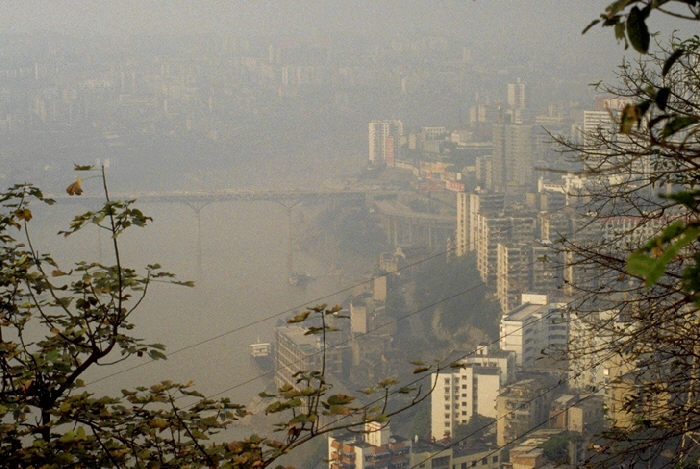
Smog over Chongqing, Peoples Republic of China.